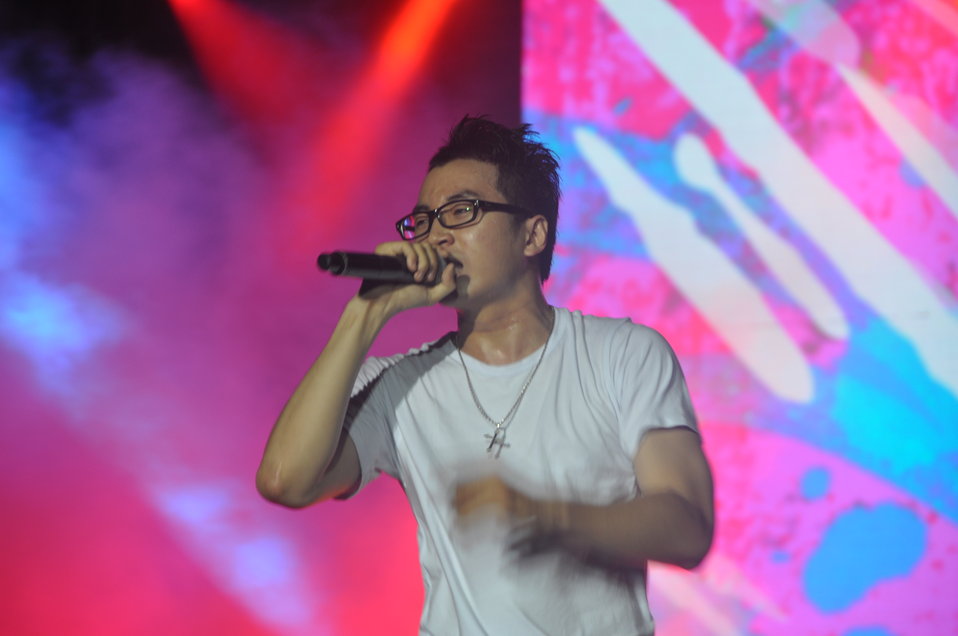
Karik performs at MTV EXIT concert against human trafficking and exploitation

USAID supports MTV EXIT concert against human trafficking and exploitation